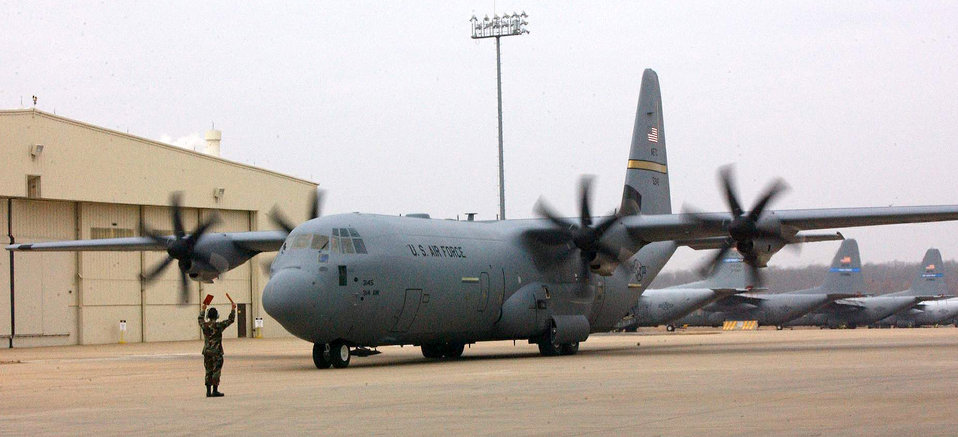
C-130J

LITTLE ROCK AIR FORCE BASE, Ark. (AFPN) -- A crew chief marshals one of the last two C-130J Hercules aircraft assigned here. The aircraft arrived today in a two-ship formation. The base now has all seven assigned aircraft.